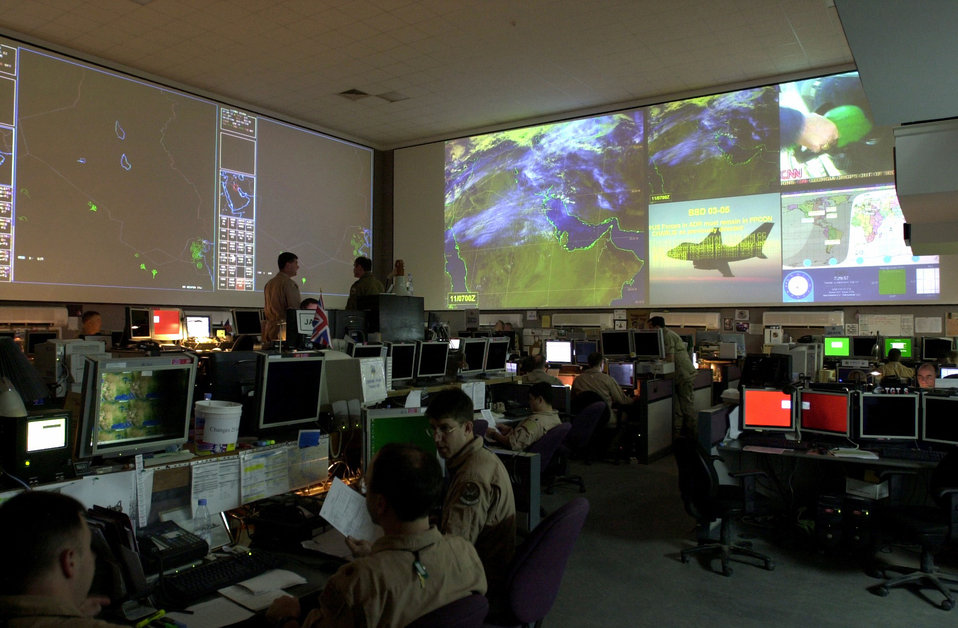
Keeping watch

OPERATION IRAQI FREEDOM -- Controllers in the Combined Air Operations Center at an air base on the Arabian Peninsula monitor the status of ongoing missions supporting Operation Iraqi Freedom. The CAOC was the nerve center for all U.S. Central Command air operations when the first air strike occurred early March 20, 2003. Cruise-missile attacks and the start of massive air operations with thousands of sorties a day followed this opening strike. By May 2, major combat was over and the stabilization phase of the operation began.